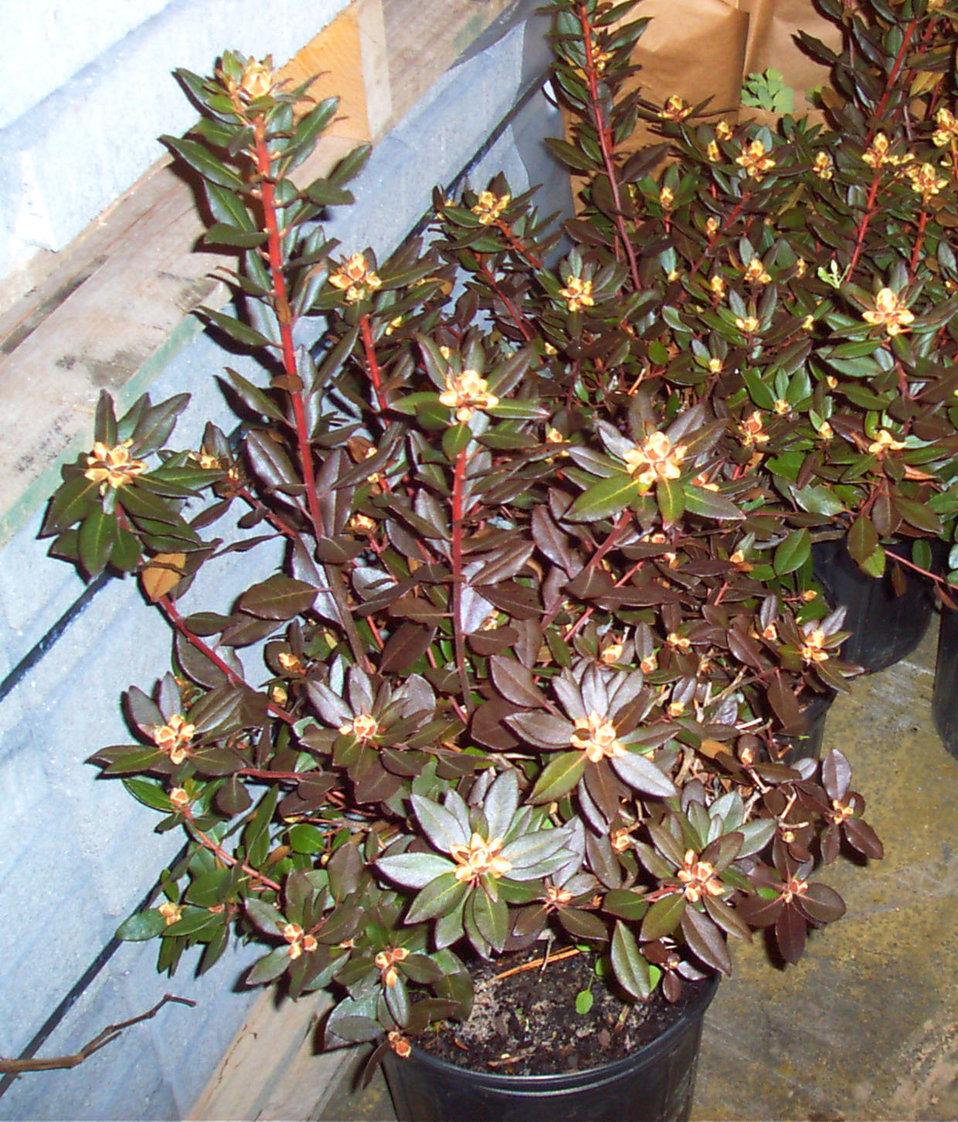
Carolina rhododendron

Rhododendron minus (Carolina rhododendron), a native plant

Learn more about EPA’s Exhibit at the 2010 Philadelphia International Flower Show:
www.epa.gov/reg3esd1/garden/flower show.htm
www.epa.gov/reg3esd1/garden/flower show plants.htm
www.epa.gov/reg3esd1/garden/pdf/flowershow2010.pdf (6 pp, 864K)